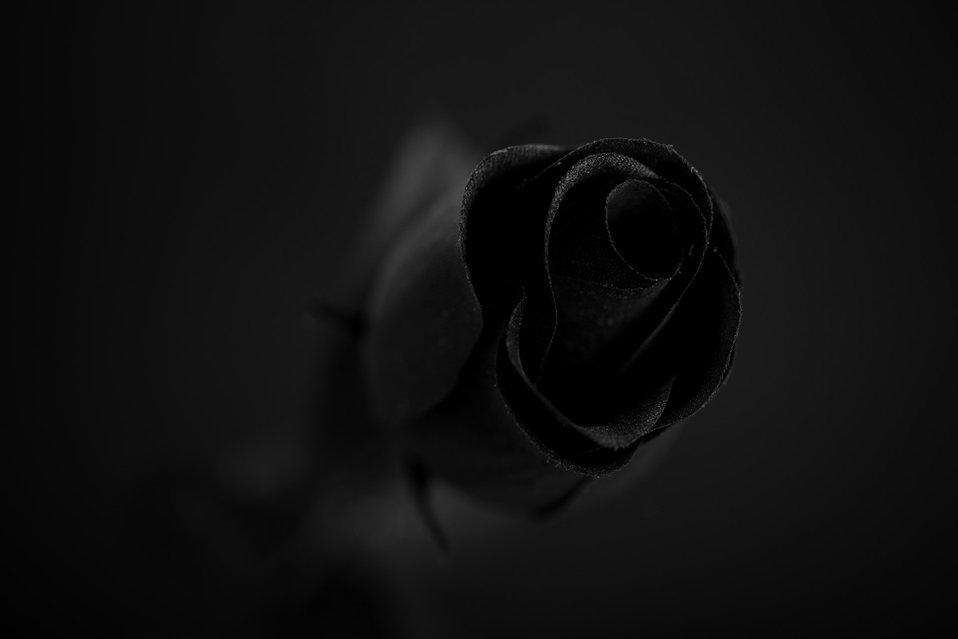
Black rose on dark background.